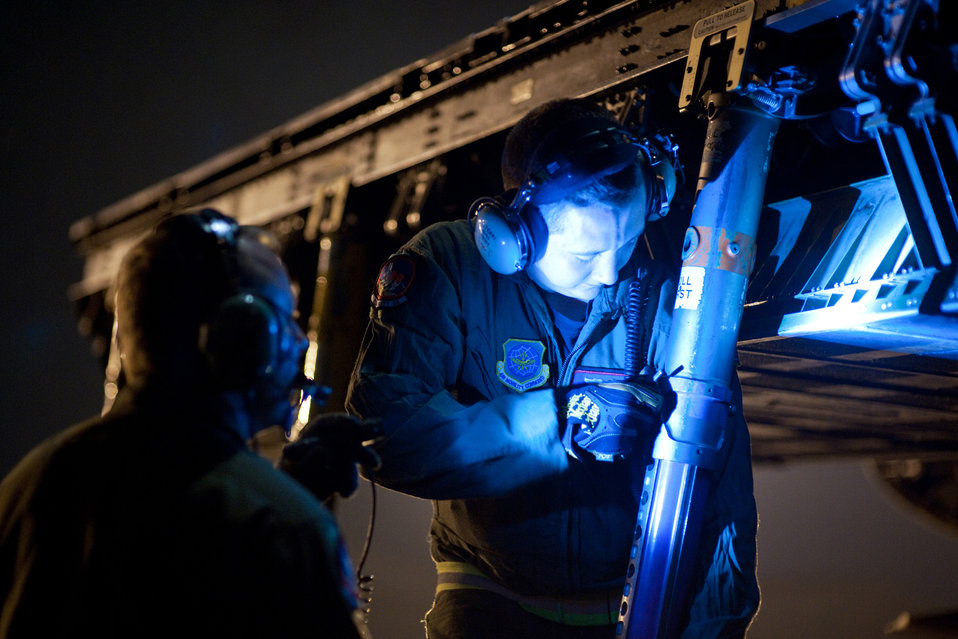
Rapid loading for the fight

Airmen adjust a stand pole under the ramp of a C-5 Galaxy Sept. 15, 2010, at Yokota Air Base, Japan, before loading pallets into the aircraft using a large K-loader. As the airlift hub of the western Pacific, Airmen at Yokota AB work operations 24/7 to keep inbound and outbound aircraft moving efficiently.